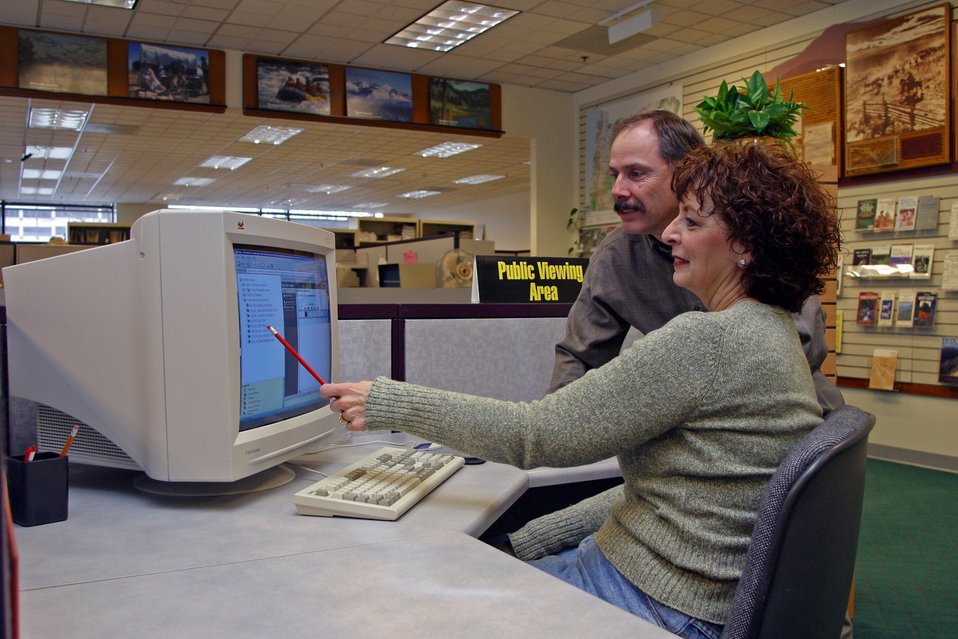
BLM's Land Office provides information about land status, minerals, maps, and general information to the public.